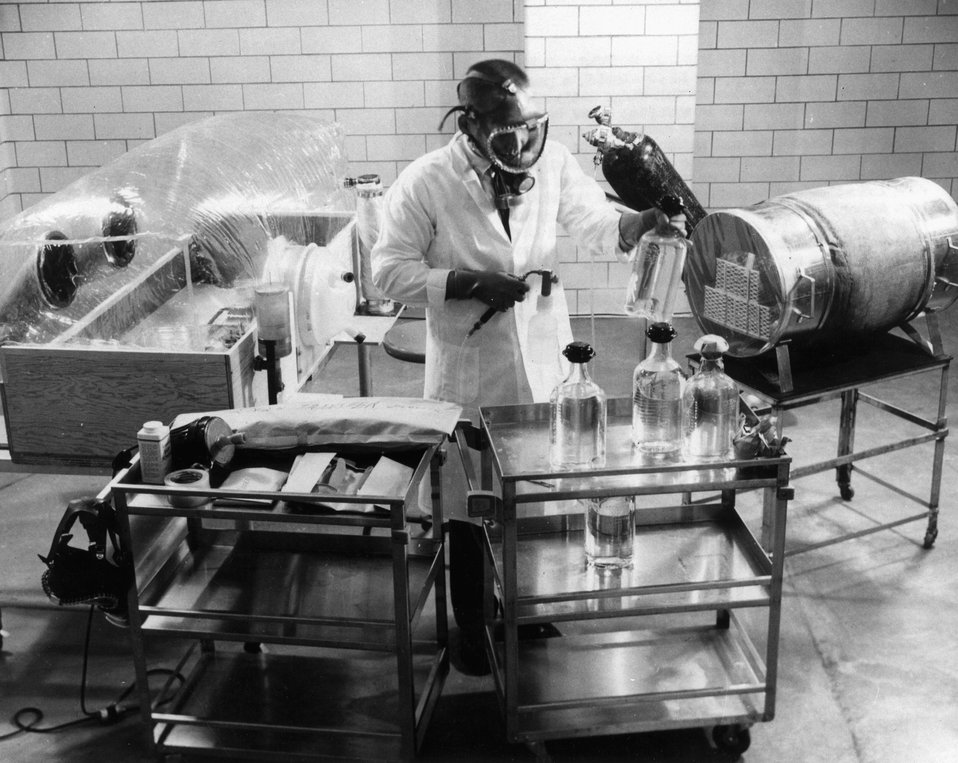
Photo shows one of the many steps in developing a germ-free environment for mice at Oak Ridge National Laboratory; a technician is spraying water bottles. c. 1966